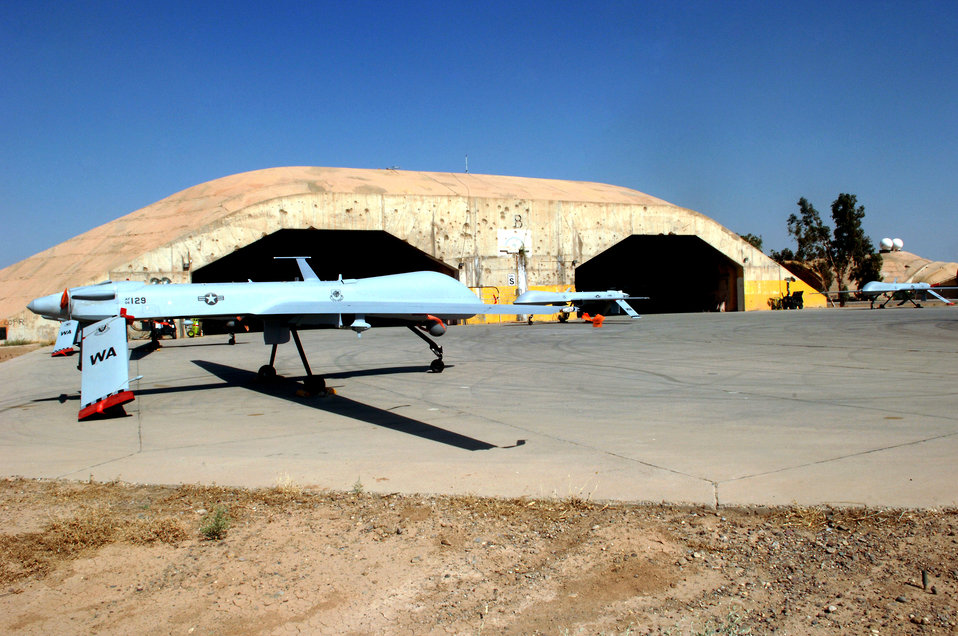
Predator operations

MQ-1 Predator unmanned aerial vehicles sit on the parking ramp at Balad Air Base, Iraq. The Predator is a medium-altitude, long endurance, remotely piloted aircraft. Its primary mission is interdiction and conducting armed reconnaissance against critical, perishable targets.